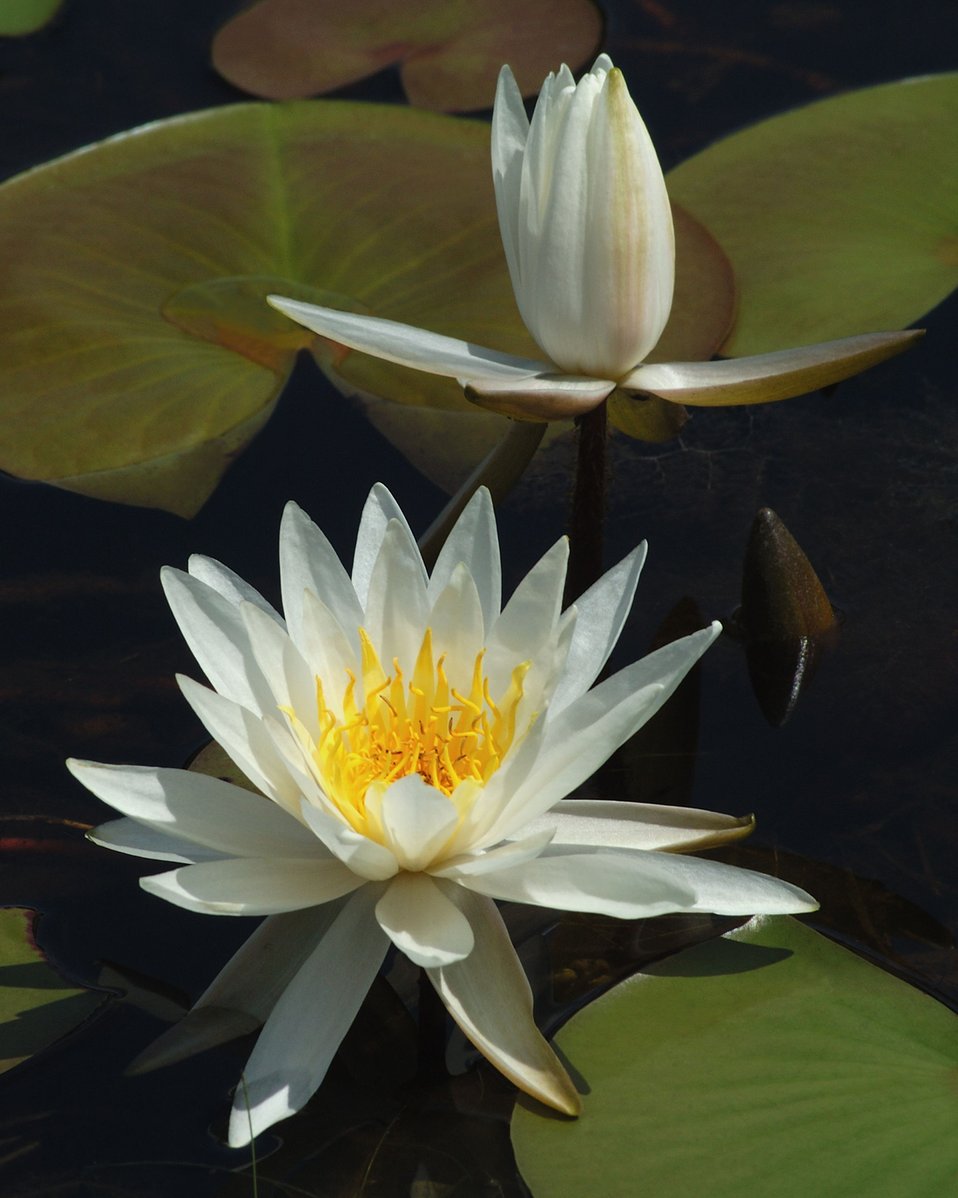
St. Marks Refuge

Waterlillies at St. Marks National Wildlife Refuge, FL.